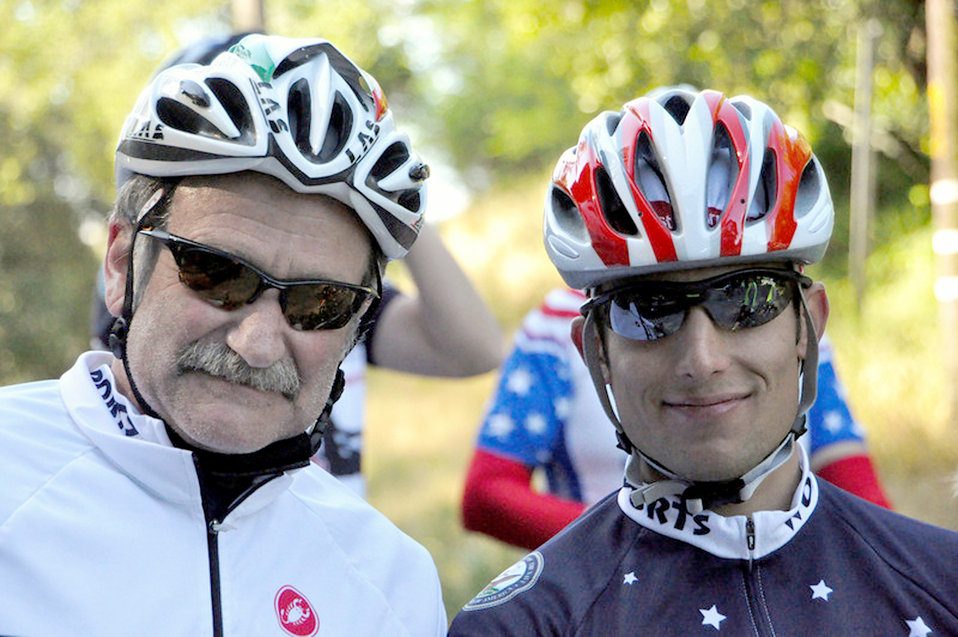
Wound Warrior Sea to Shining Sea

Staff Sgt. Marc Esposito and actor/comedian Robin Williams May 22, 2010, in San Francisco. Sergeant Esposito is participating in Sea to Shining Sea, a 4,000-mile bike ride which started at the Golden Gate Bridge and will end July 24, 2010, in Virginia Beach, Va. The goal of the ride is to honor the courage of our service men and women, recognize the strength of the American spirit and challenge perceptions of how we view athletes. Sergeant Esposito is from the 21st Special Tactics Squadron at Pope Air Force Base, N.C.